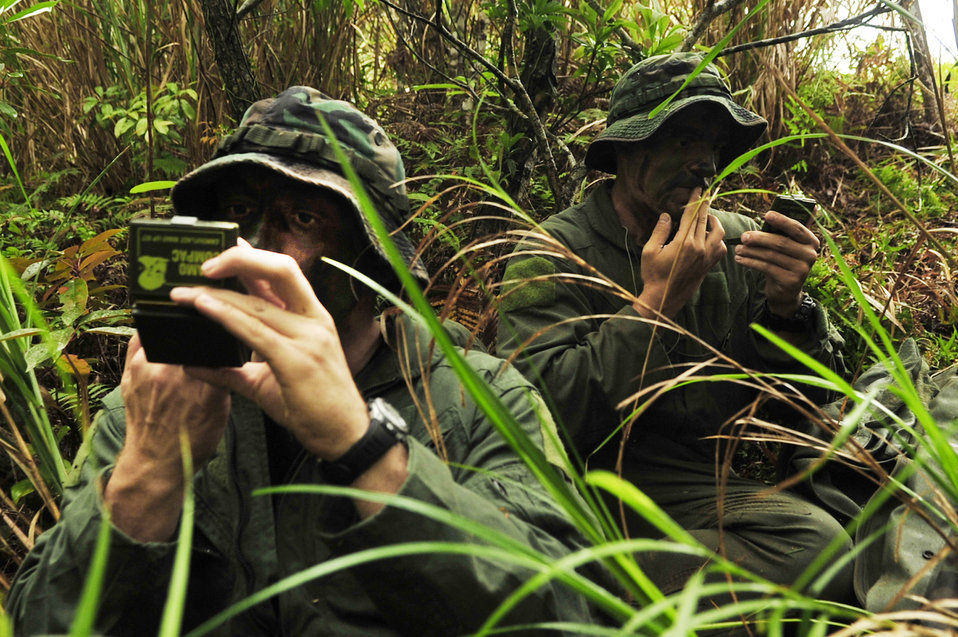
Kadena Airmen test readines during exercise

Capt. Aaron Wallace (left) and 1st Lt. Joseph Bisson apply camouflage during an evasion scenario after a simulated KC-135 crash at Kadena Air Base, Japan, March 25, 2010. The 18th Wing participated in a local operational readiness exercise March 22 through 26 to test base Airmen's ability to defend Japan and maintain peace and stability in the Pacific region. Captain Wallace and Lieutenant Bisson are both pilots from the 909th Air Refueling Squadron.